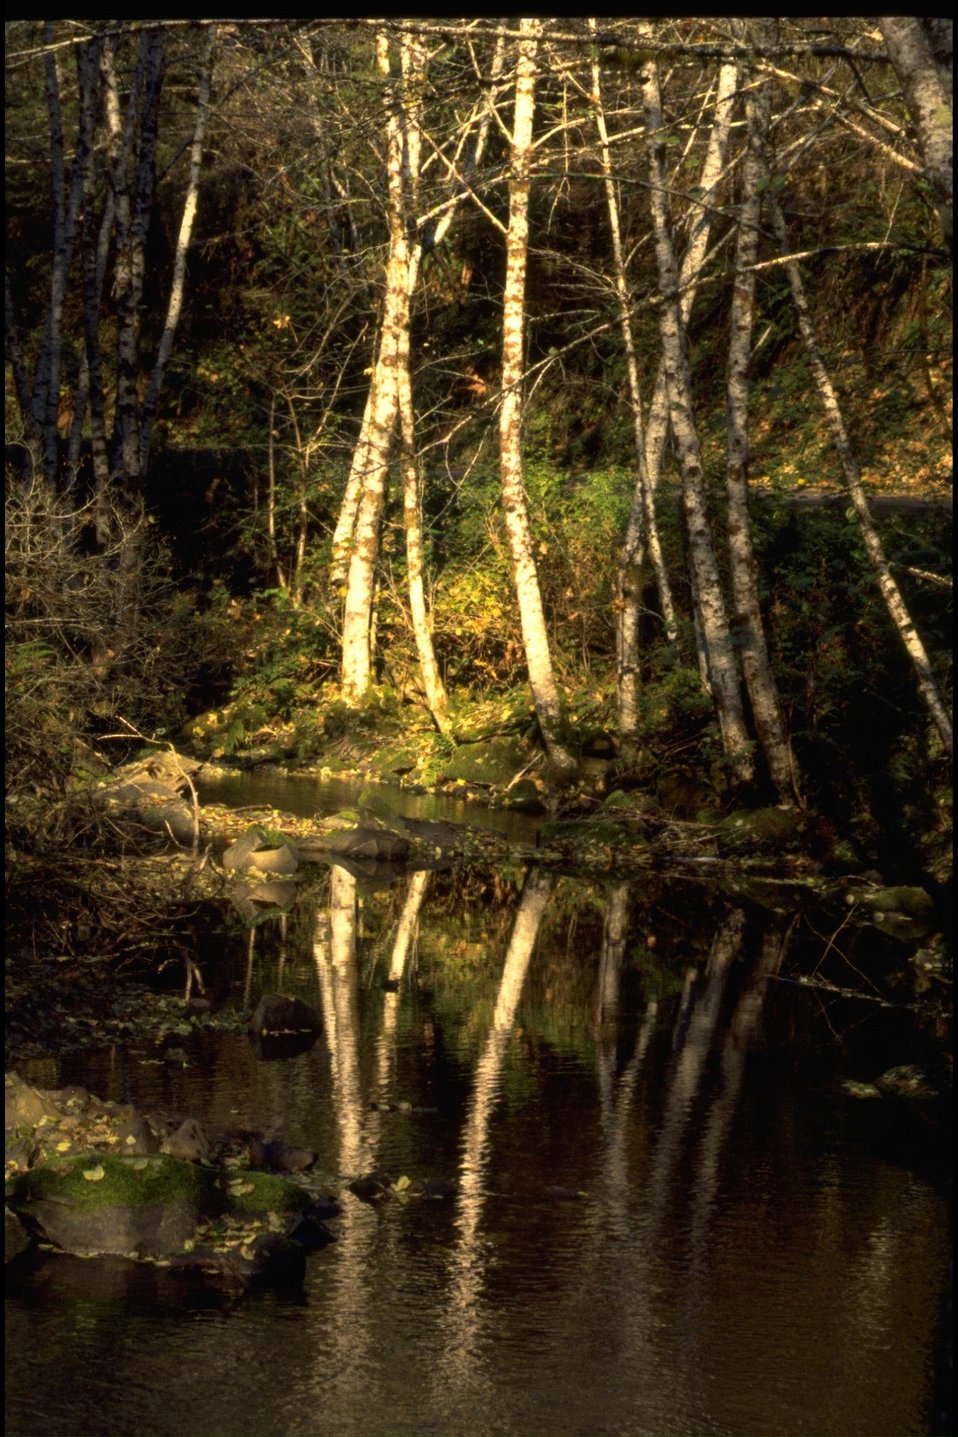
Scenic view on Whittaker Creek.